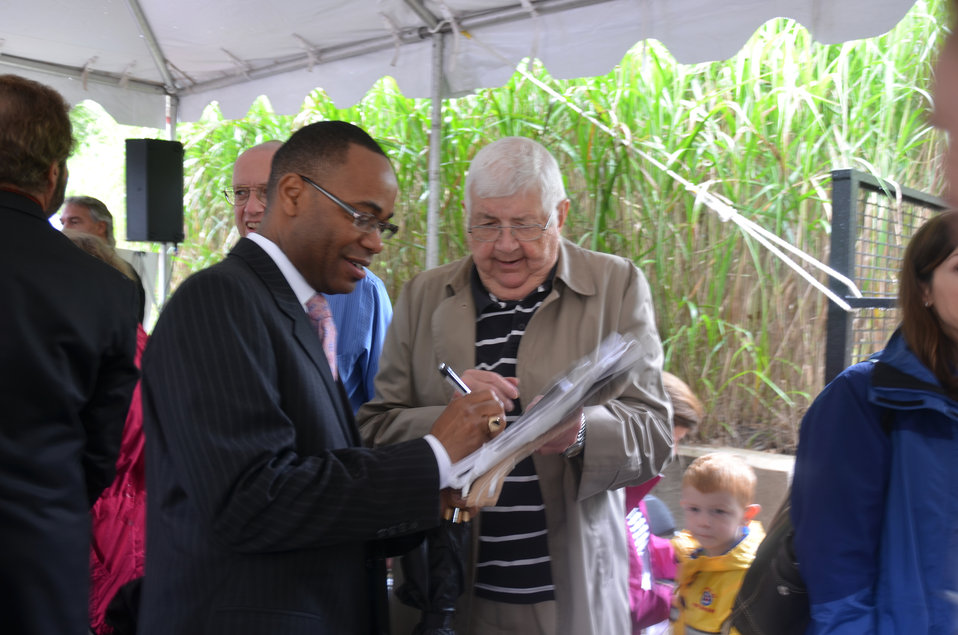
Save Vanishing Species Stamp First Day of Issue